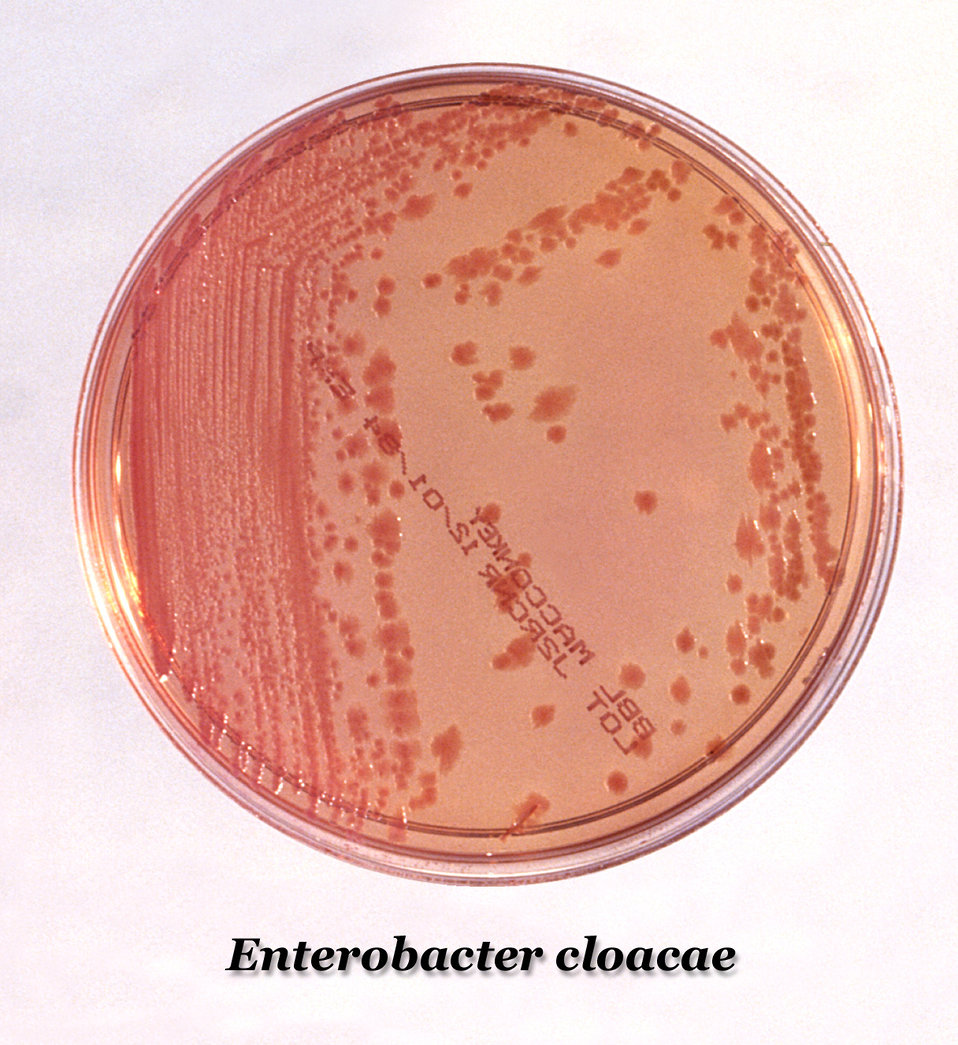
This MacConkey agar culture plate showed Enterobacter cloacae colonial growth 24 hours after being inoculated with a specimen sample.